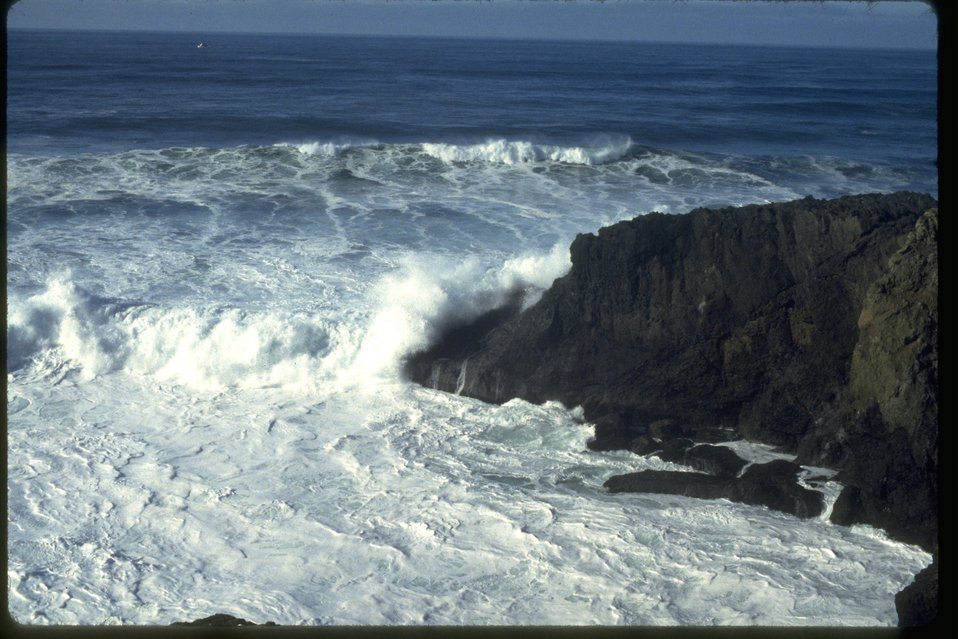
Waves pounding onto cliff near the Yaquina Head lighthouse.